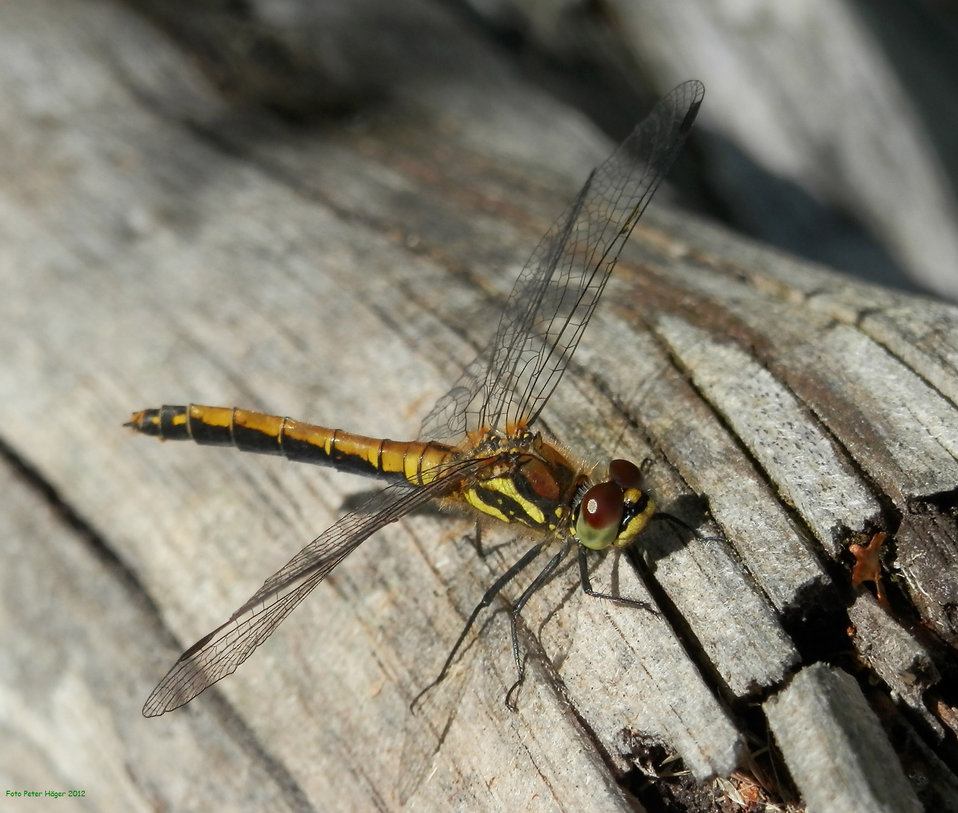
Odonata

Dragonfly.